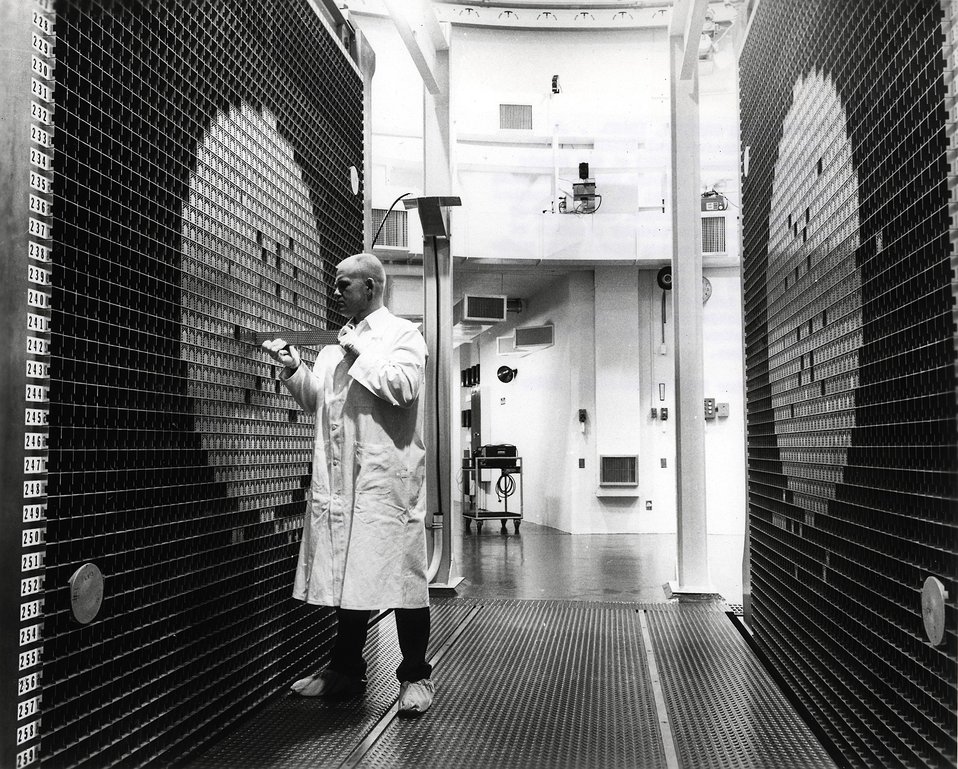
Pictured is the ZPPR assembly machine located in the reactor cell of the facility.